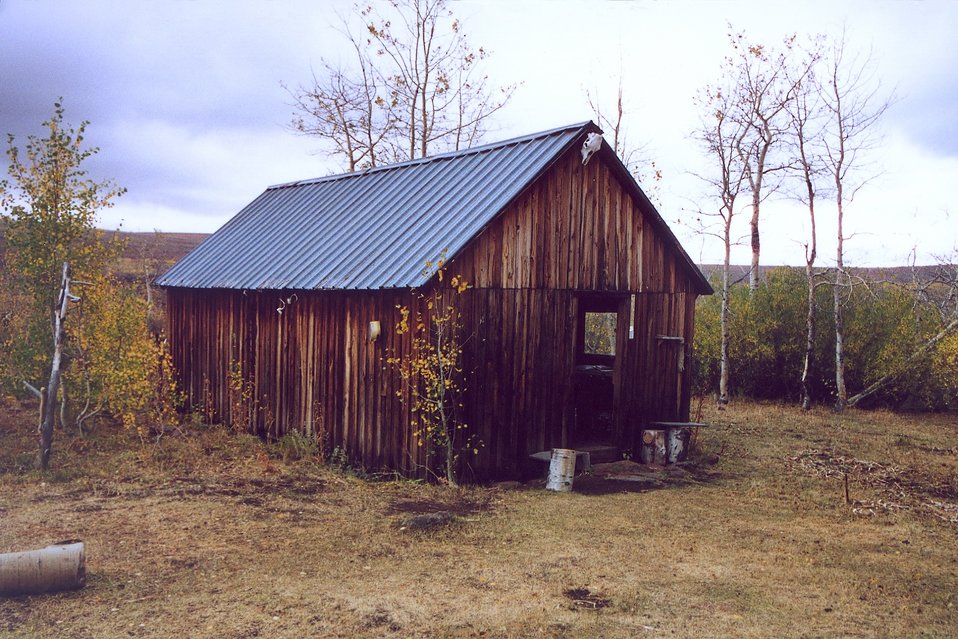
Nye Cabin (with skull), Steen's Mountain.